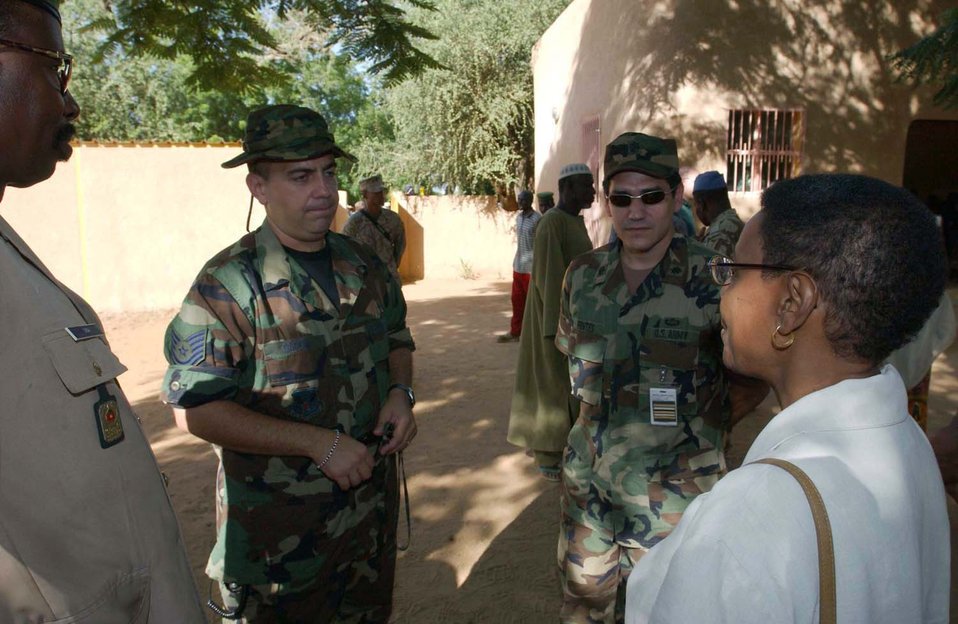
Ambassador visits reservisits

CAMP TONDIBIAH, Niger -- The U.S. Ambassador to Niger, Gail Denise Mathieu, talks with Tech. Sgt. Rey Garcia during her visit to a local clinic here. The ambassador was visiting the medical team of 12 Air Force reservists working with the Niger military to provide medical assistance to the villagers. Sergeant Garcia is the noncommissioned officer in charge of the international health-care specialist program for Air Force Reserve Command at Robins Air Force Base, Ga.